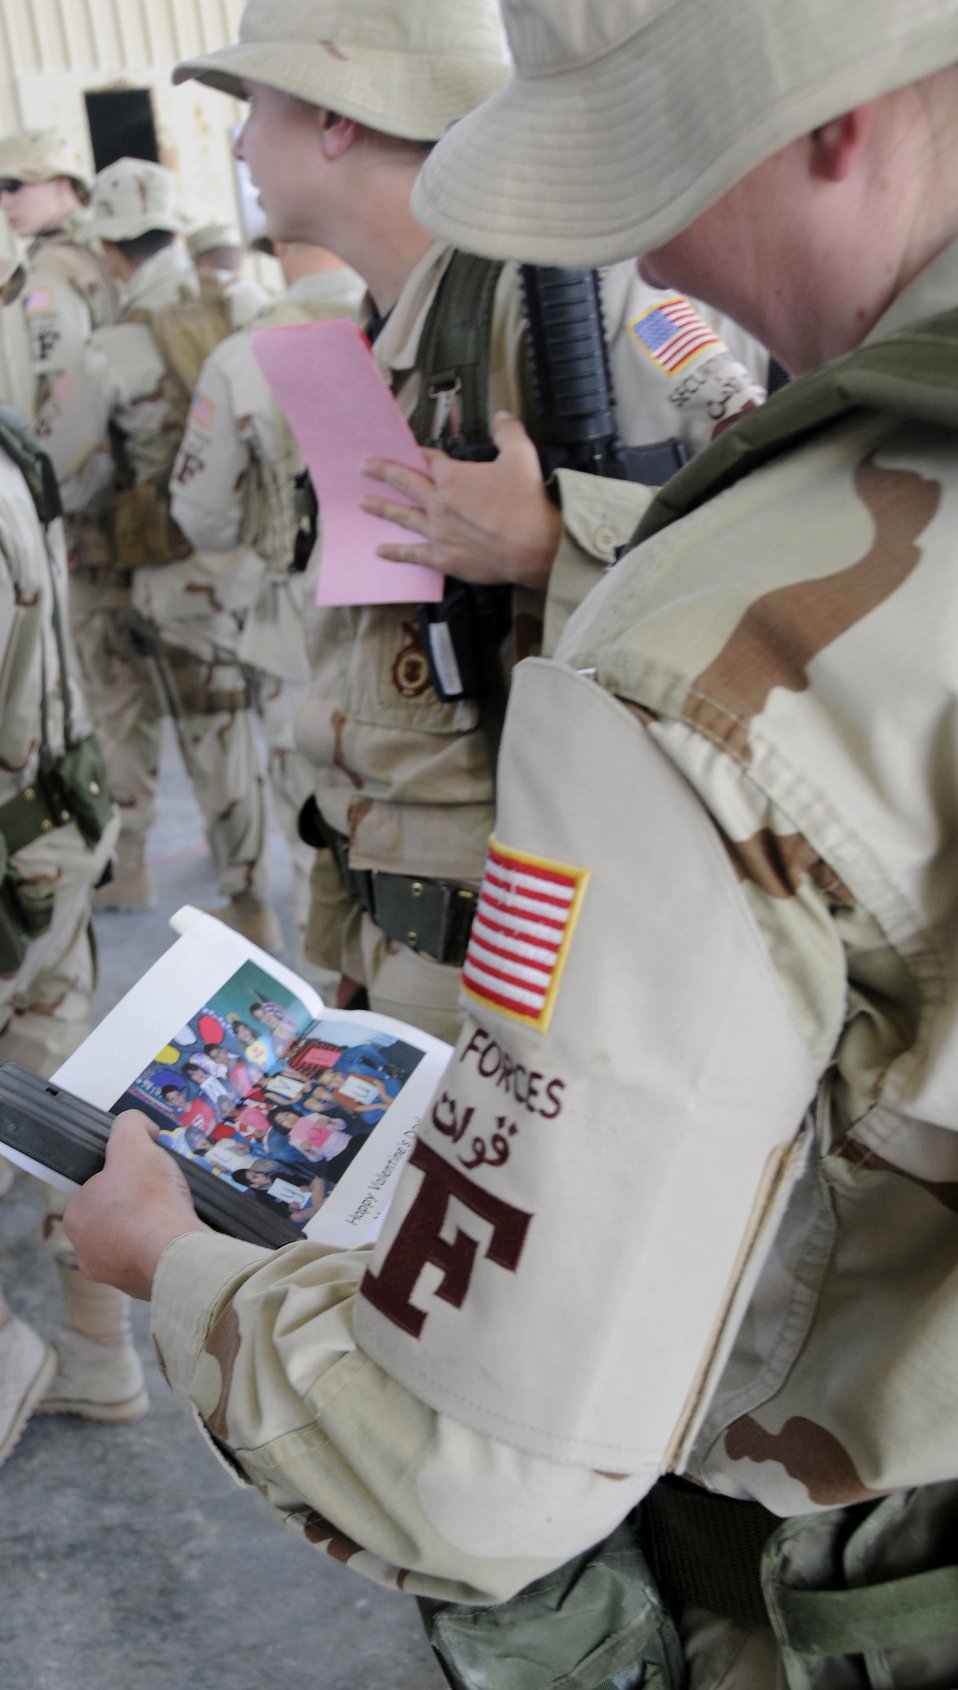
Texas schools send Valentines to Southwest Asia Airmen

A 379th Expeditionary Security Forces Squadron member reads a Valentine from Merkel Elementary School students during a surprise